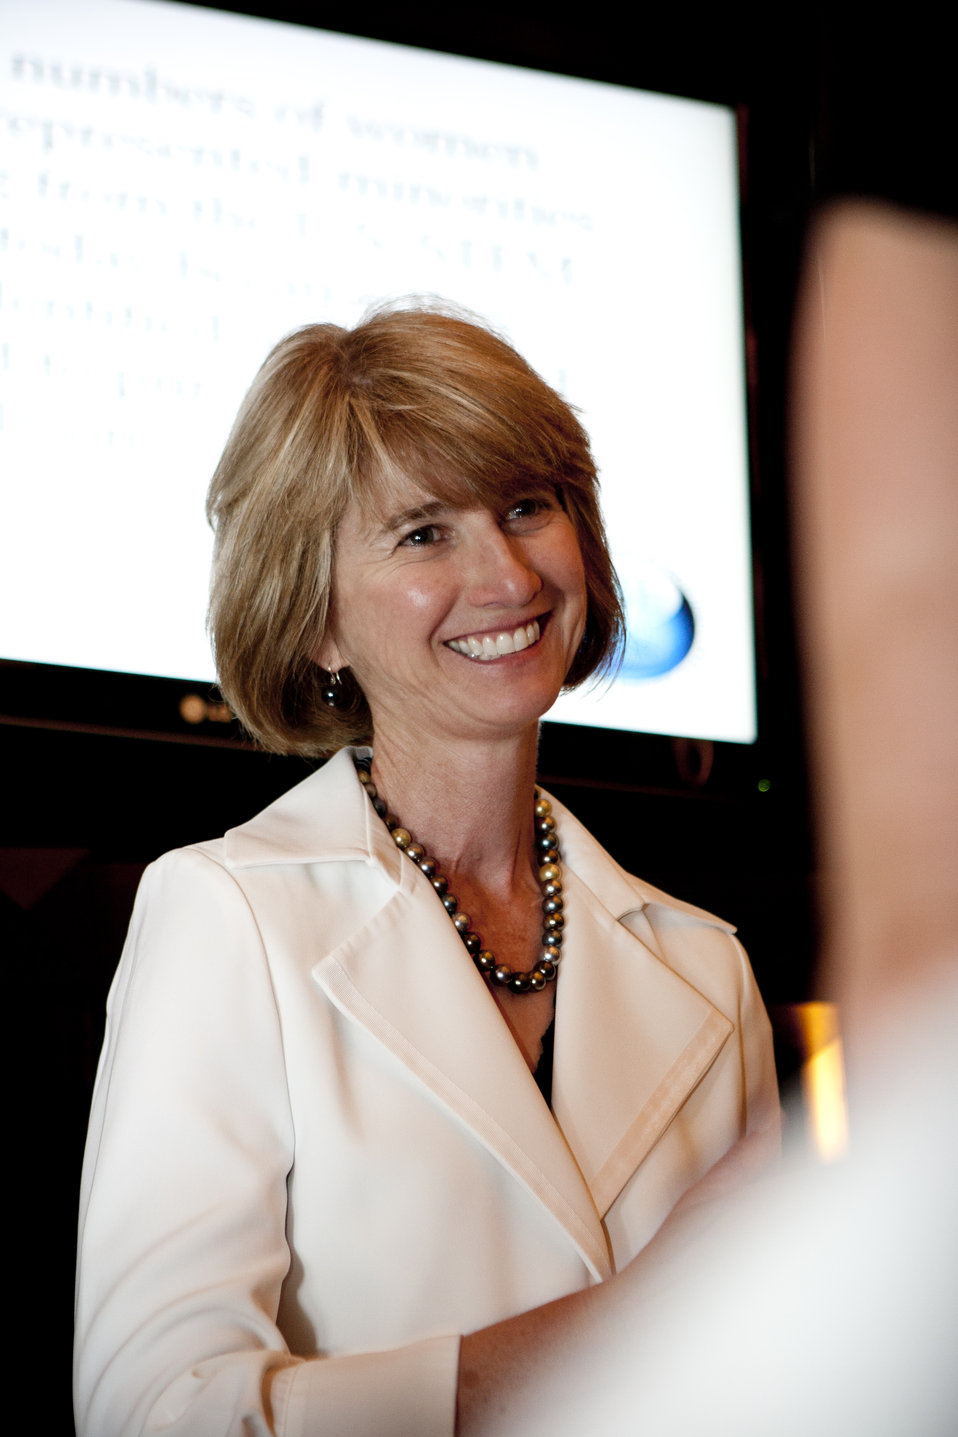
WomenandEnergy 45